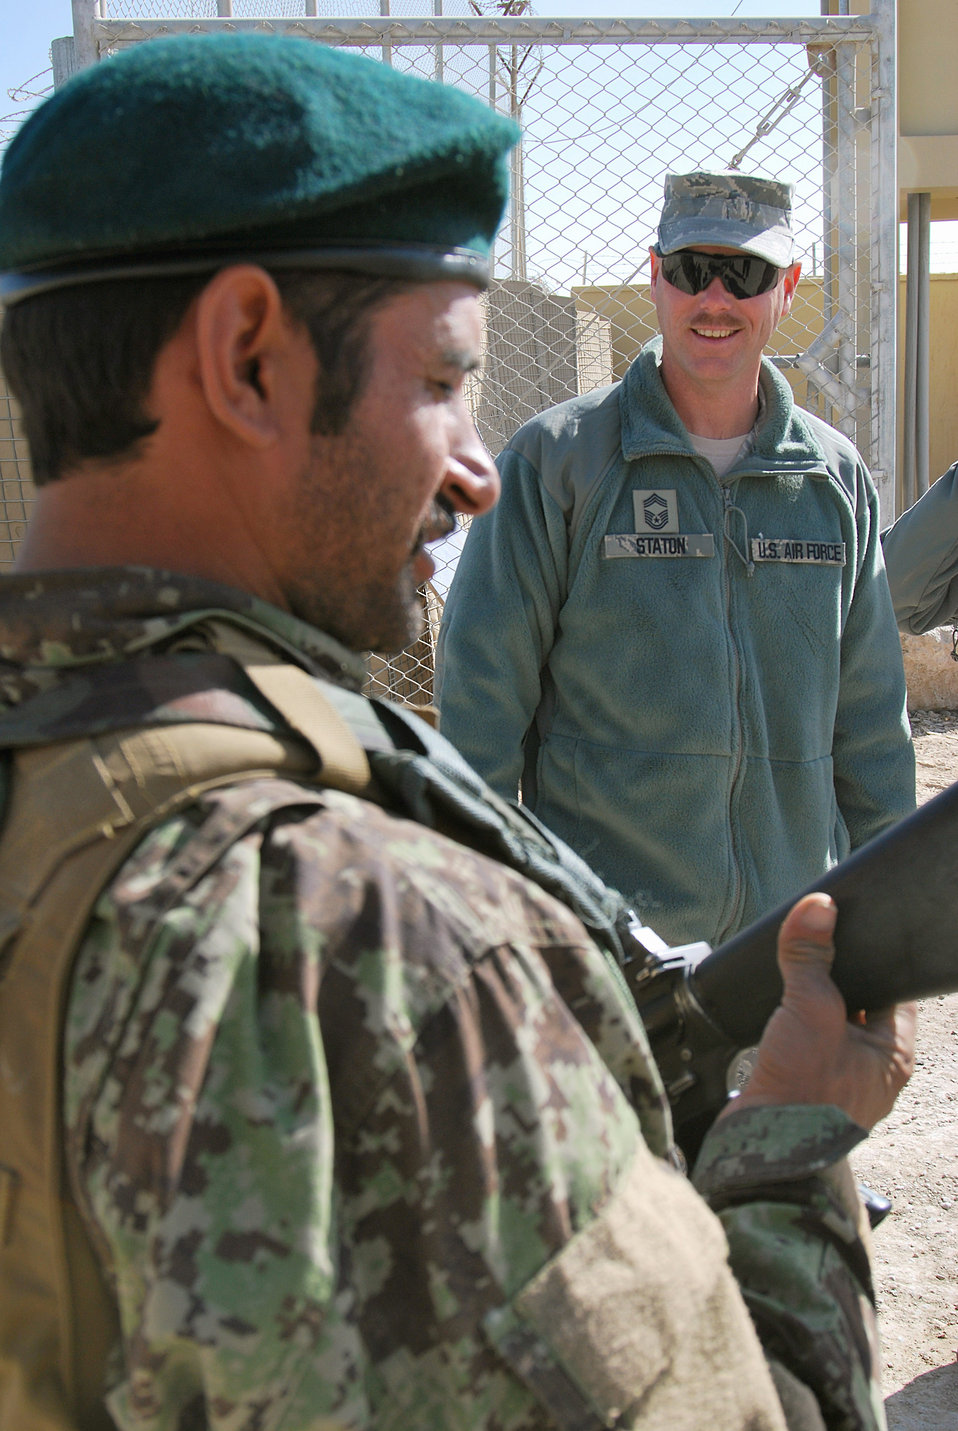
Mentoring Afghan Partners

Chief Master Sgt. Dave Staton talks to an Afghan Security Forces airman about his weapon Dec. 1, 2010, at Kandahar Airfield, Afghanistan. Chief Staton is the 738th Air Expeditionary Advisory Group superintendent. As the senior enlisted member, he is also the direct mentor to the Kandahar Air Wing’s enlisted leader, Command Sgt. Maj. Mohammad Hassan.